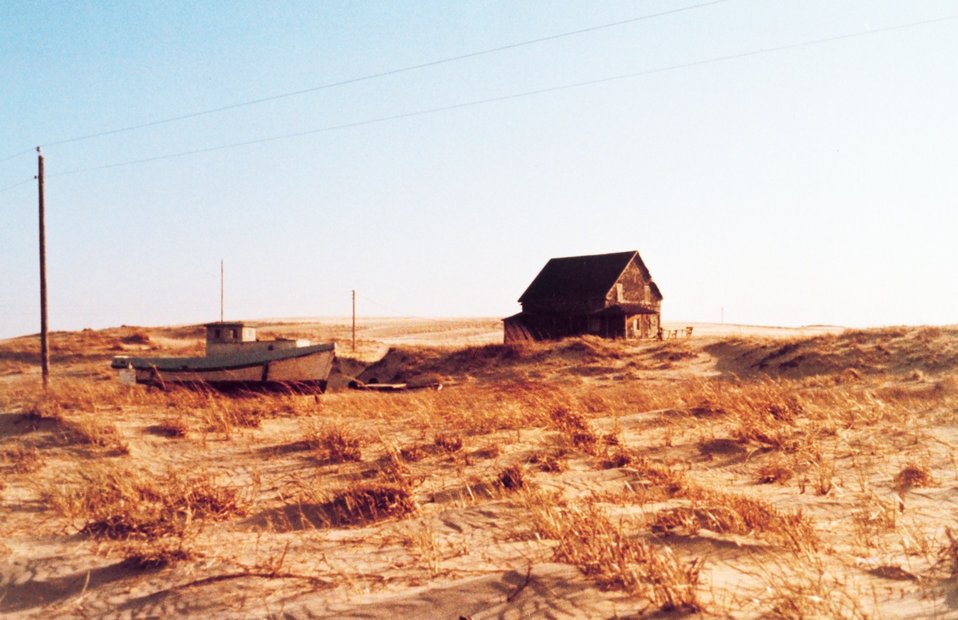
A deserted fisherman's home on the Outer Banks